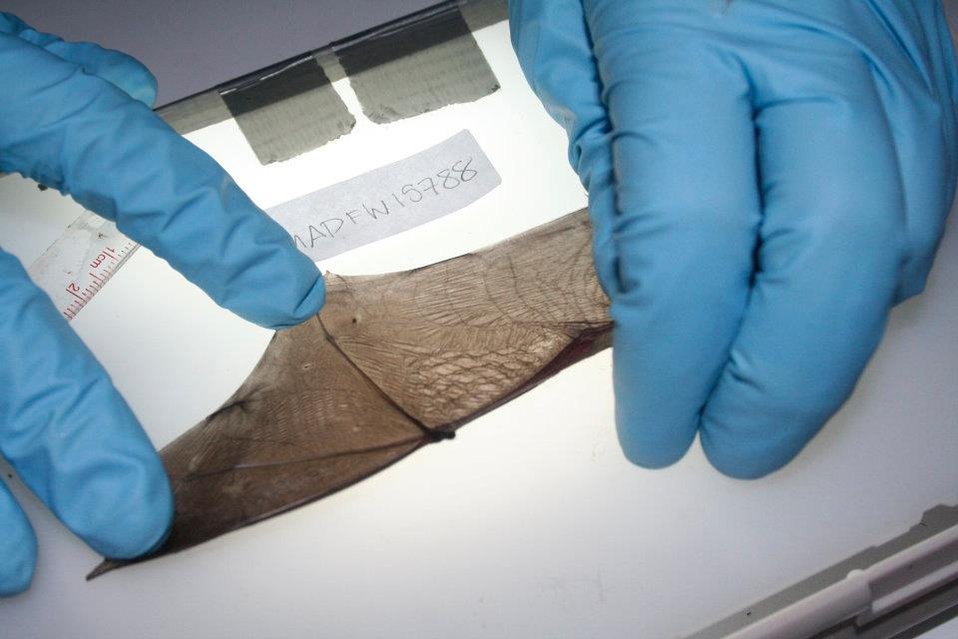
Researcher inspects bat wing